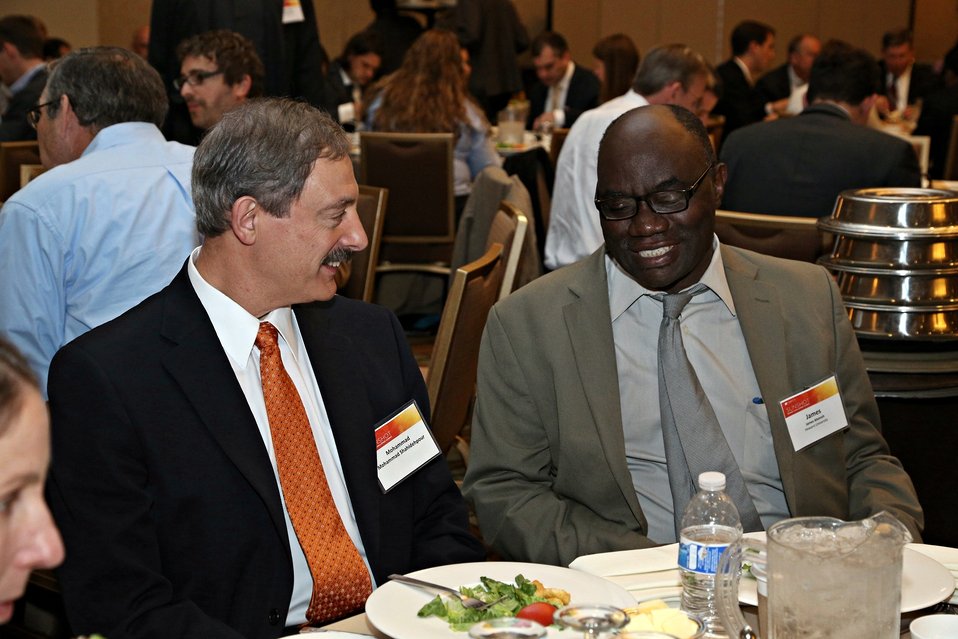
Breakout Sessions 13